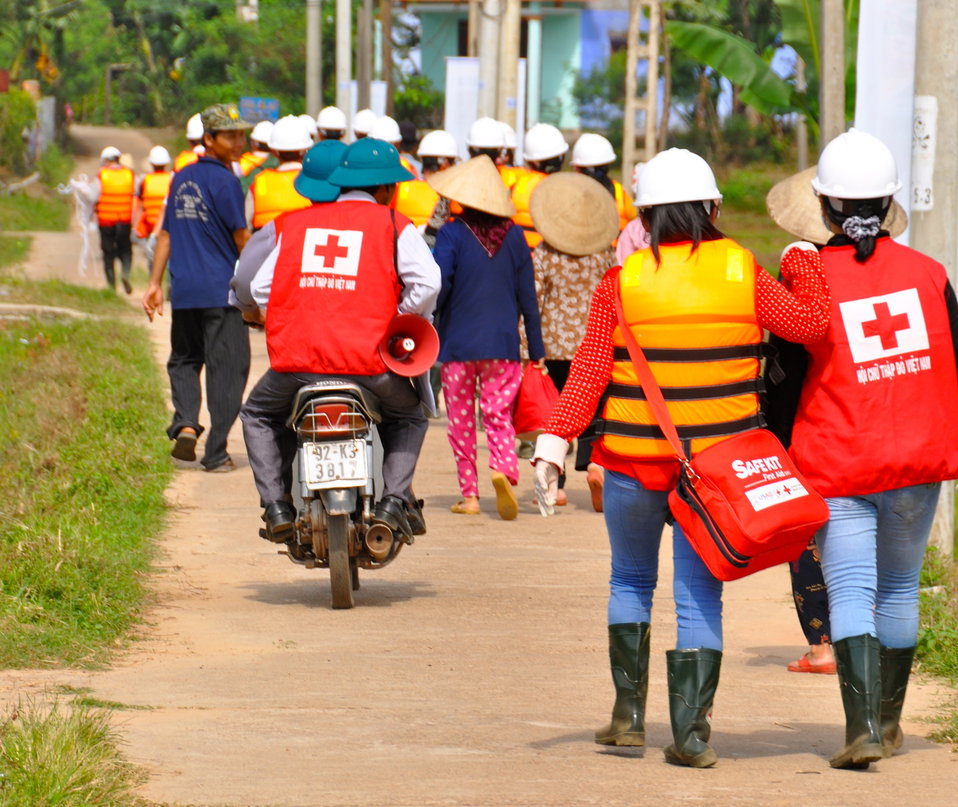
USAID, Red Cross Support Disaster Response Drill in Duy Hoa Commune, Quang Nam Province

Duy Hoa Commune, Quang Nam Province
December 5, 2012